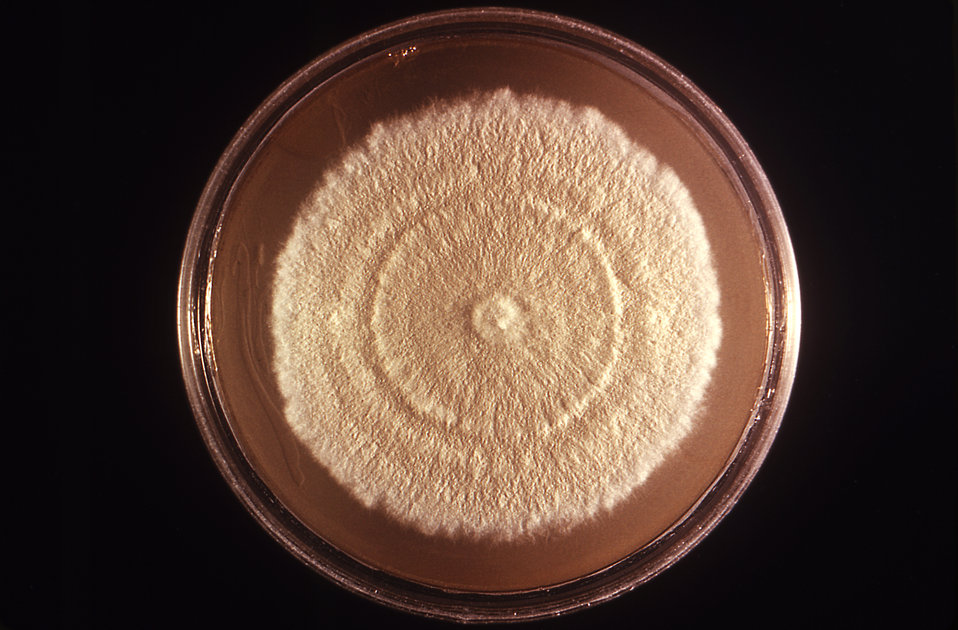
This image depicts a single older colony of fungal organisms from the genus Sepedonium, which had been grown on a medium of Sabouraud dextrose agar.